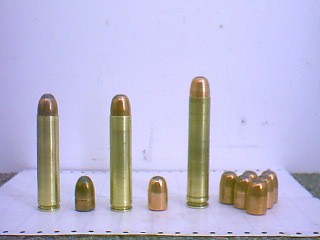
A .700 Hubel Express Cartridges, one of multiple variations of a big-bore hunting cartridge.